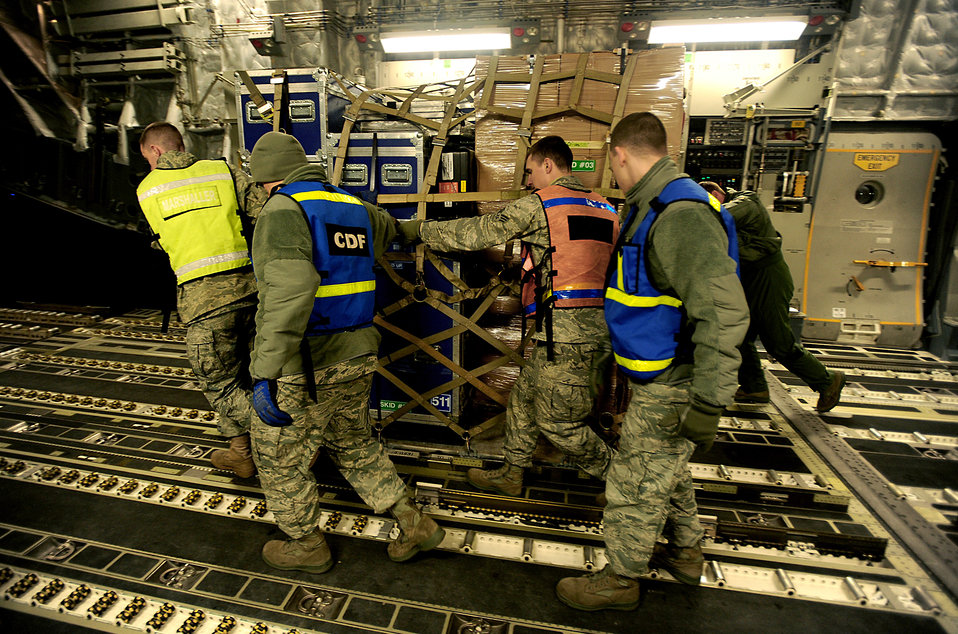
OPERATION TOMODACHI

U.S. Air Force Aerial Porters from Misawa Air Base, Japan off load pallets of earthquake relief supplies from a C-17 III Globemaster on March 13, 2011 during Operation Tomodachi.